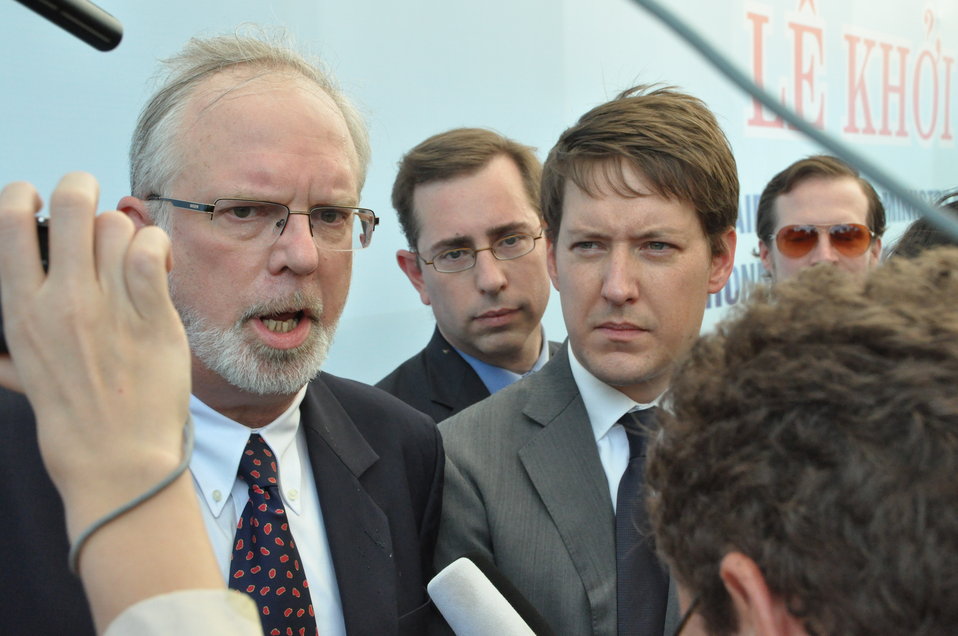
U.S. Ambassador David B. Shear meets the press at the Environmental Remediation of Dioxin Contamination at Danang Airport Project Launch

Danang, August 9, 2012